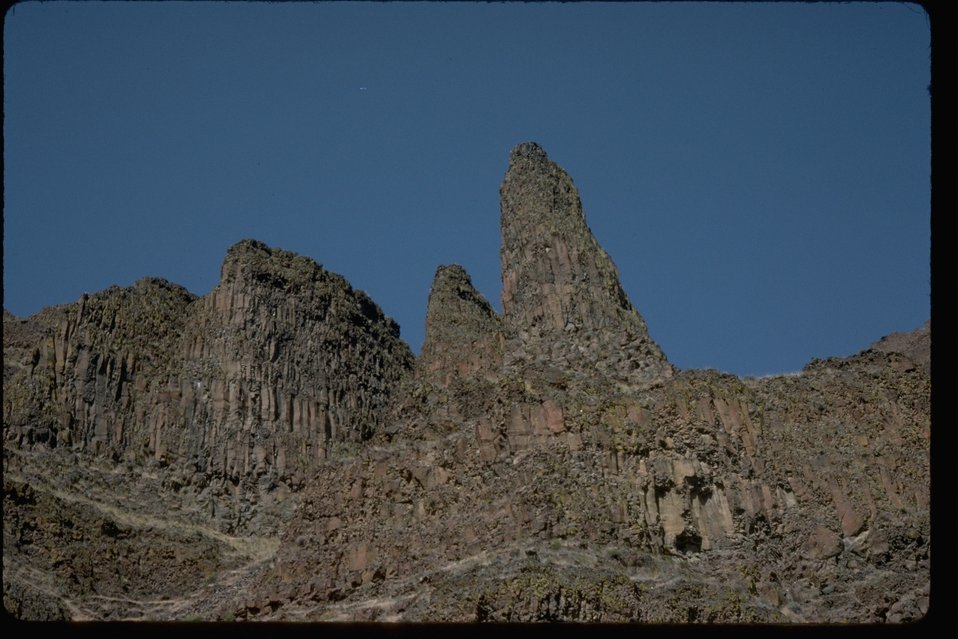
Large Rock formation along the John Day River.